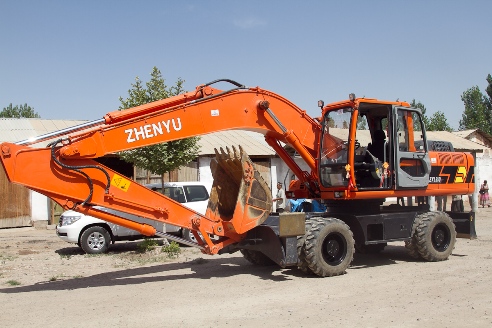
U.S. and Tajik Representatives Participate in a Handover Ceremony

USAID/Tajikistan Jeffrey Lehrer, Deputy Chairman of Qubodiyon District Ergashev Ziyodali, Tajik Head of Water Users Associations Support Department of the Ministry of Melioration and Water Resources Eshmirzoev Ismat, representatives of Tajik water users associations, and WUASP staff participate in a handover ceremony in which the U.S. government, through the Water User Association Support Program (WUASP) funded by the U.S. Agency for International Development (USAID), donates a wheeled excavator to the Federation of Water Users Associations “Sarob” in Qubodiyon district of Khatlon Oblast in Tajikistan on May 24, 2011.